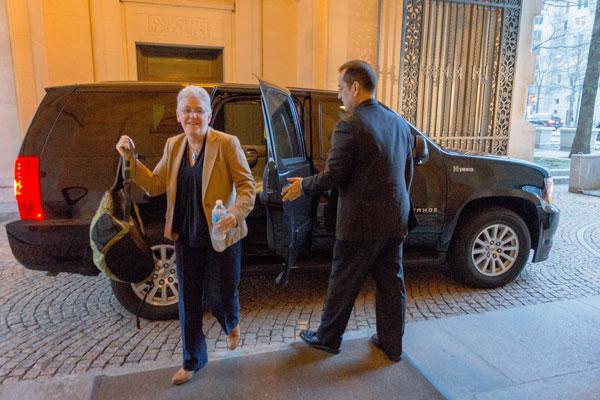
Day in the Life - April 4, 2014

7:24 am - EPA Administrator Gina McCarthy arrives for work in the morning with her trusty backpack – full of briefing materials, policy papers and speeches – in tow. (1/12)